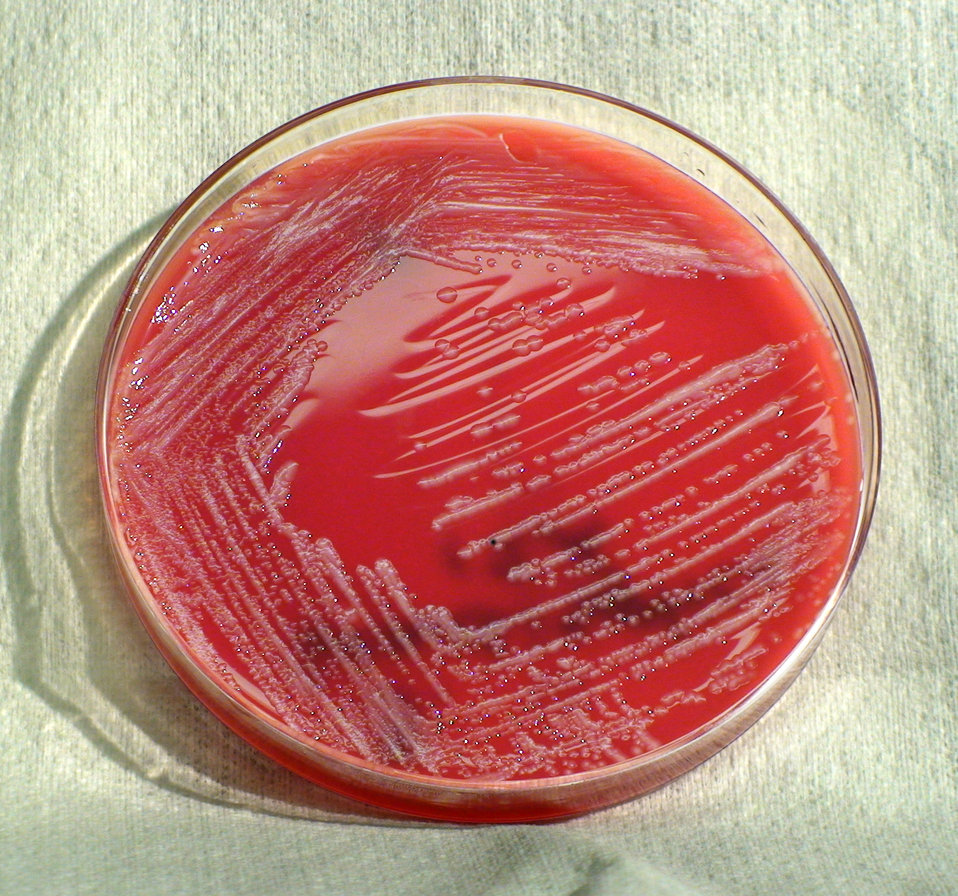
This photograph depicts the colonial morphology displayed by Gram-negative, Bordetella bronchiseptica bacteria, which was grown on a medium of sheep's blood agar (SBA), for a 48 hour time period, at a temperature of 37�C. See PHIL 12396 for a closer view of these bacterial colonies, and PHIL 12394 for a view of these bacterial colonies after only 24 hours of growth.